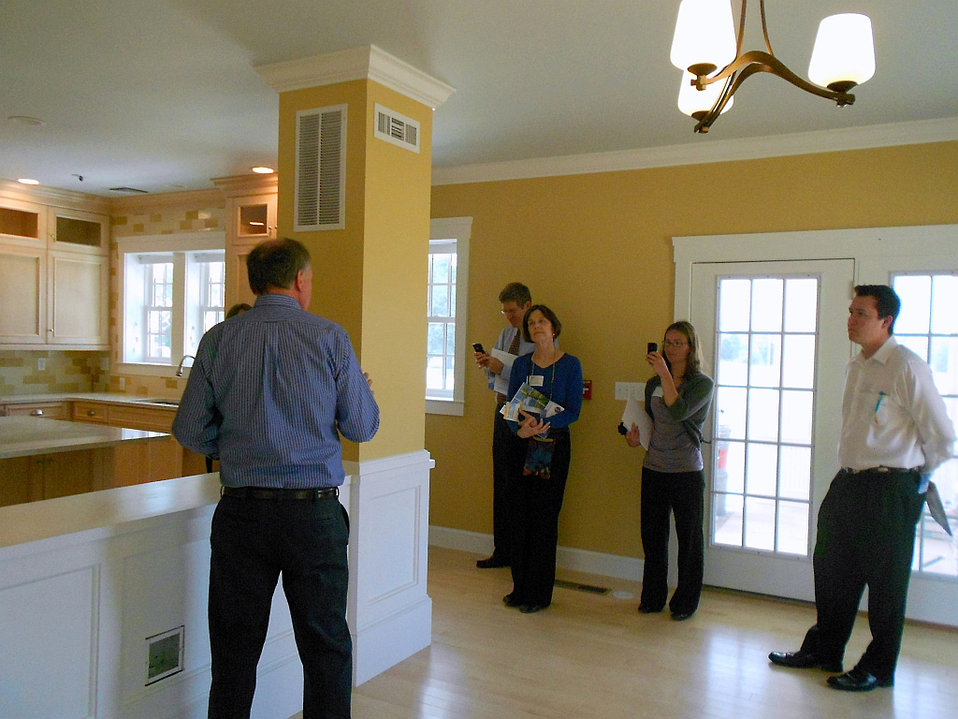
Net Zero Energy Residential Testing Facility Tour

Dr. Hunter Fanney (left, back to camera) Chief of the Building Environment Lab in NIST’s Engineer Lab describes recycled materials built into the NIST Net Zero Energy Residential Test Facility’s kitchen to Senate Energy & Natural Resources Committee staffers touring the newly completed test home.